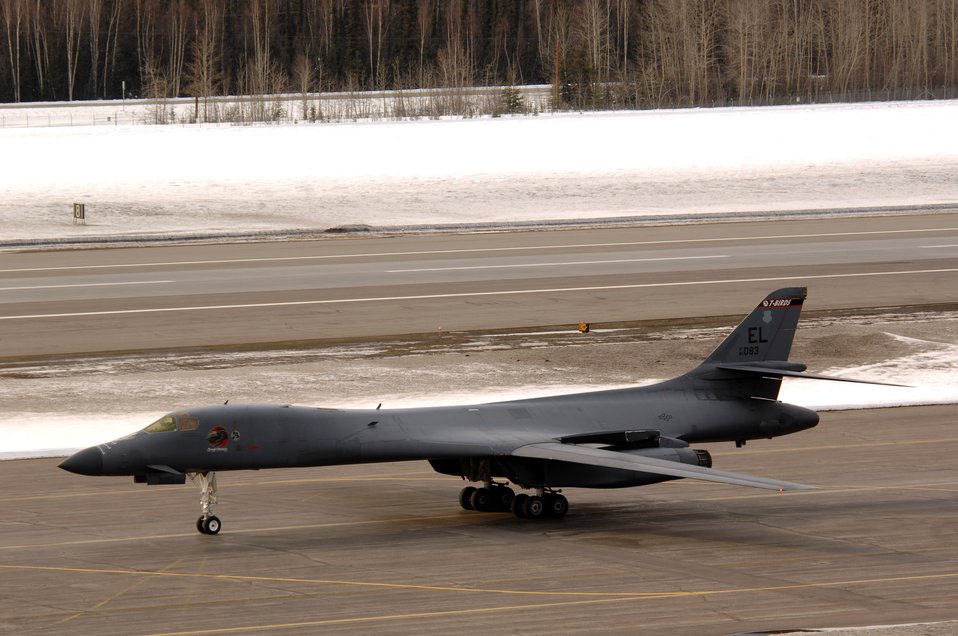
Red Flag-Alaska waves

A B-1B Lancer from Ellsworth Air Force Base, S.D., performs a touch and go before landing for Red Flag-Alaska 07-1 April 3 at Eielson Air Force Base, Alaska. More than 1,300 military members from the United States, France and Australia have gathered here to participate in Red Flag-Alaska 07-1 scheduled April 5 to 21.